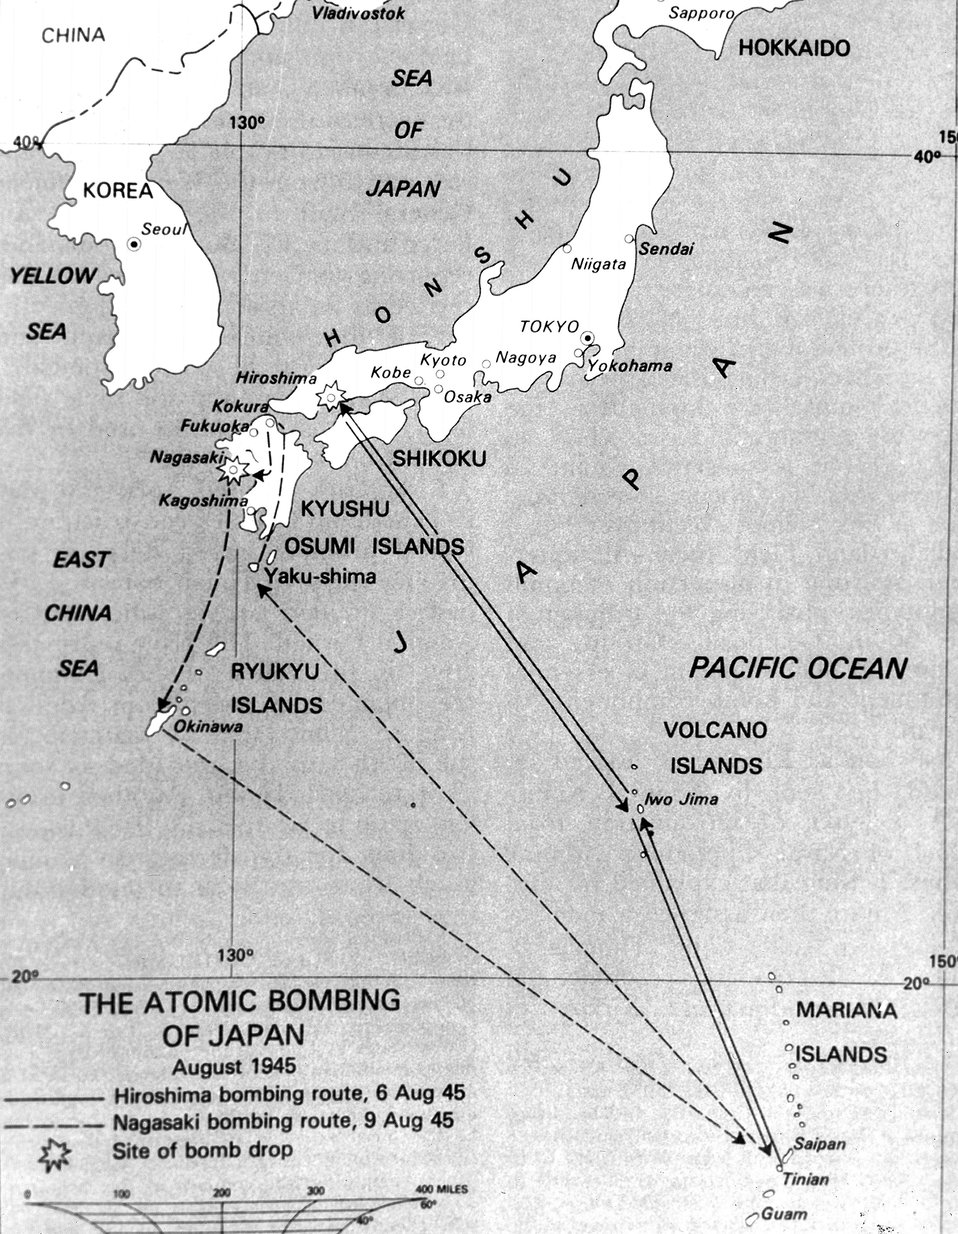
Atomic Bombing of Japan.